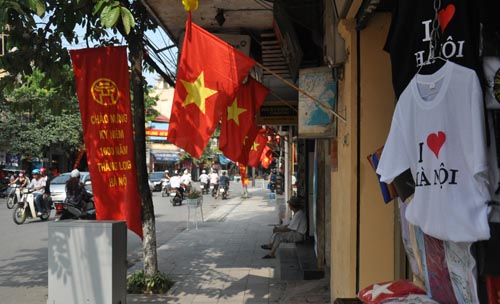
Hanoi celebrates 1,000 years as capital of Vietnam.